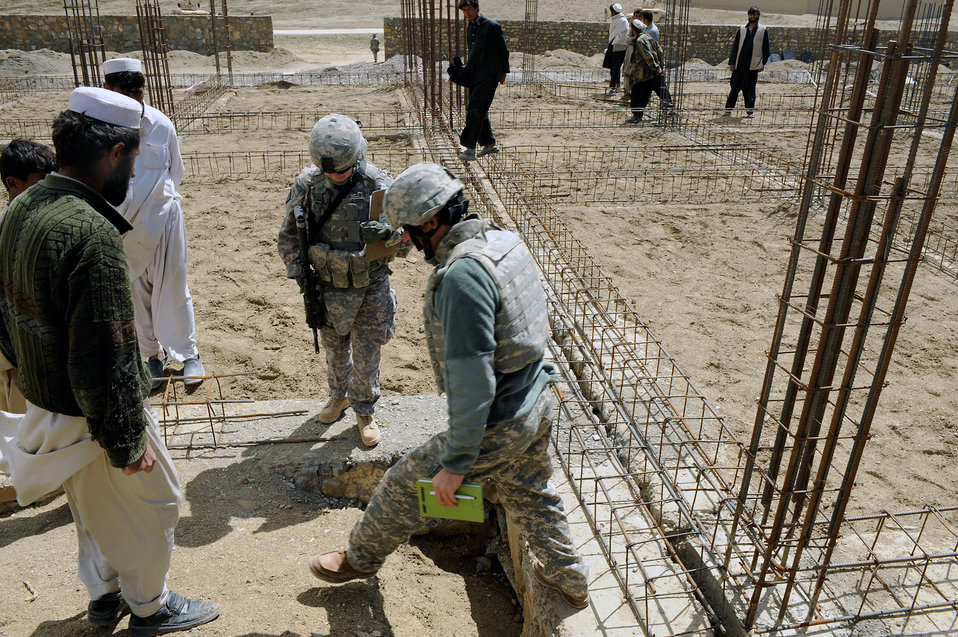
Providing reconstructive assistance, hope to Afghan homeland

Maj. Kimberly Riggs talks with her interpreter and local contractors about construction work for the Osman Khel School April 13 in Gardez City, Afghanistan. Major Riggs is the engineer officer in charge of the Paktya Provincial Reconstruction Team.